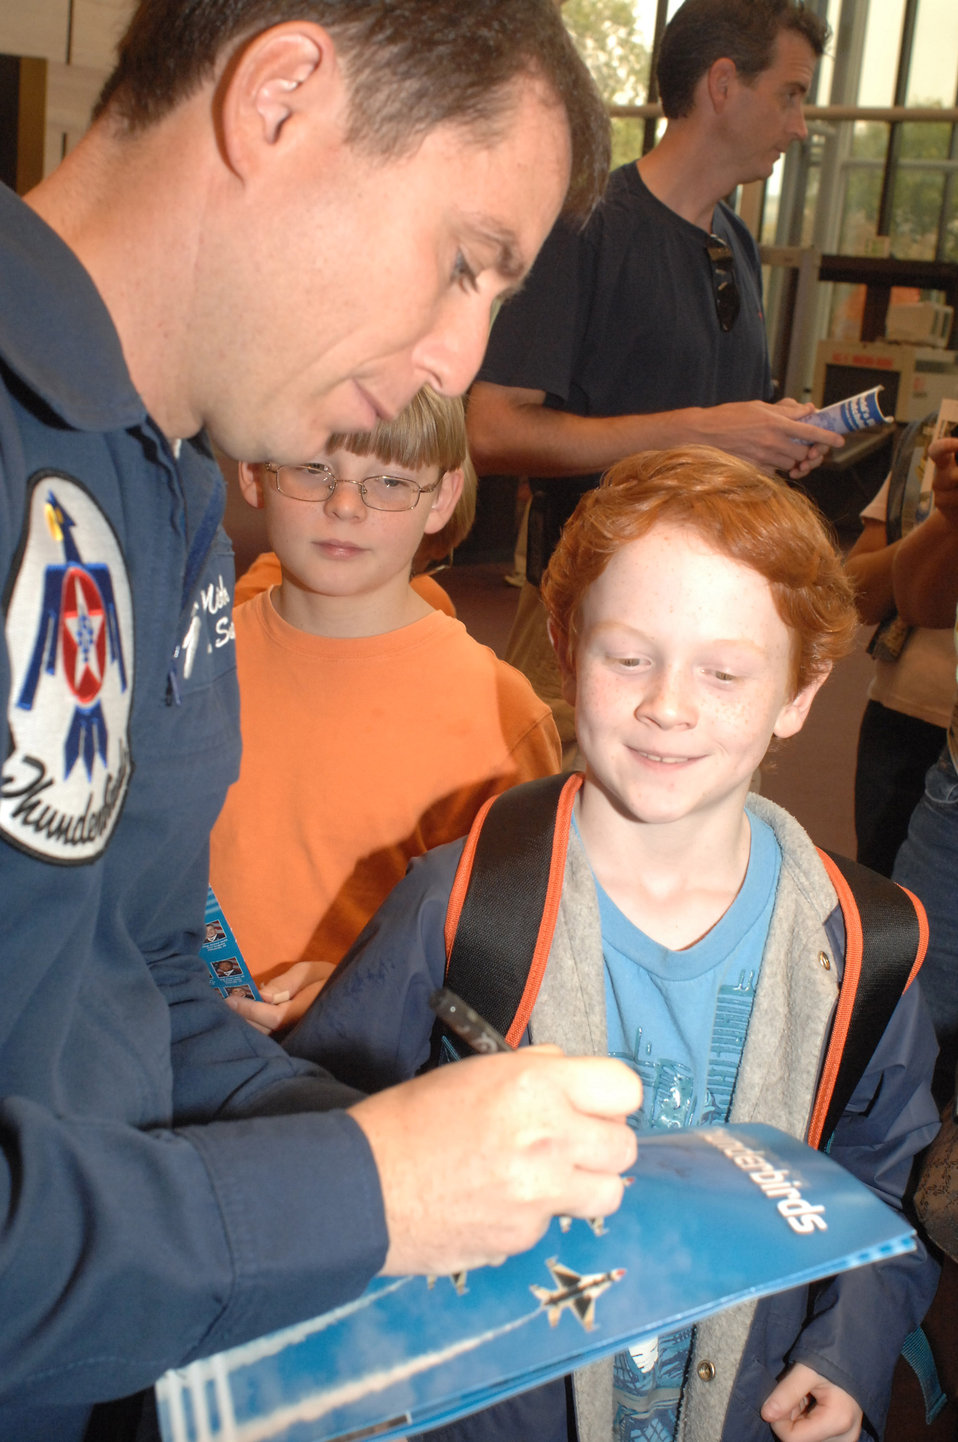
Thunderbirds visit Smithsonian Air and Space Museum

Maj. (Dr.) Dan Mirski signs a Thunderbirds booklet for Bryan Pursley, who is visiting from San Antonio. Major Mirski is the flight surgeon for the Air Force Thunderbirds demonstration team and was at the Smithsonian as part of a week-long series of events that will culminate with the opening of the Air Force Memorial Oct. 14.